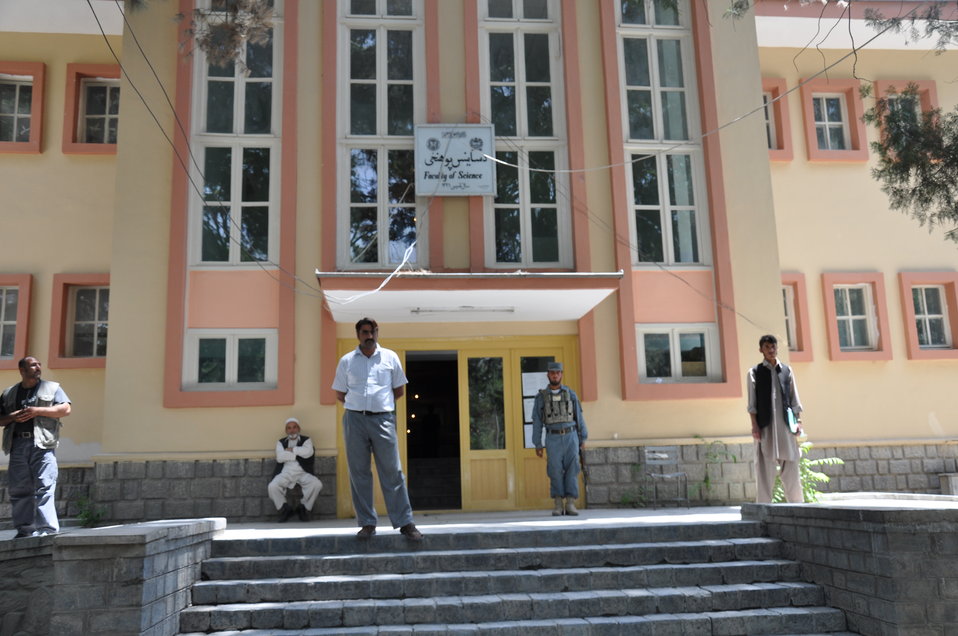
Kabul University Herbarium